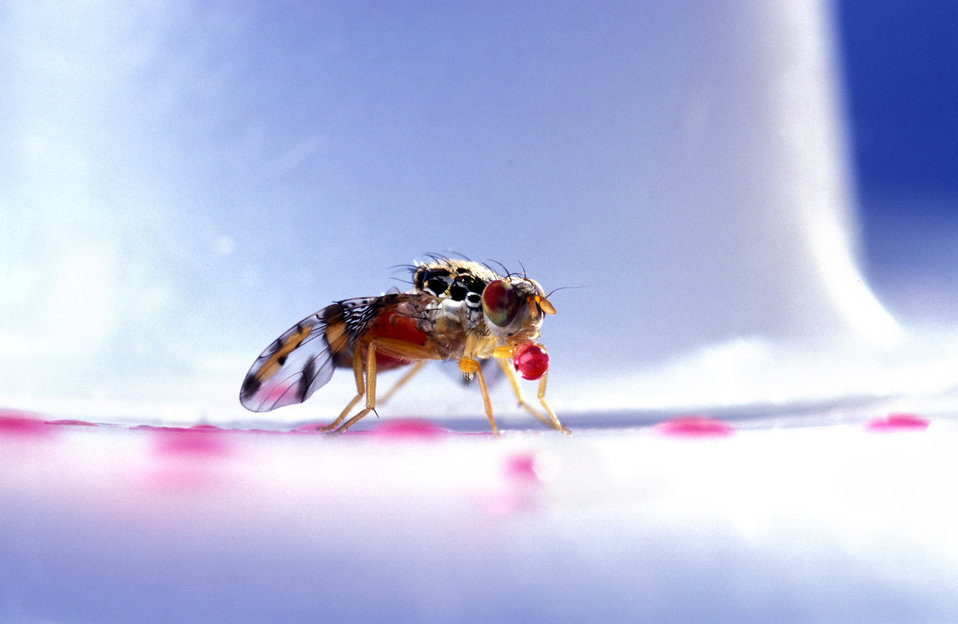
The Mediterranean fruit fly (Ceratitis capitata) or medfly is a species of fruit fly capable of causing extensive damage to a wide range of fruit crops. It is native to the Mediterranean area, but has spread invasively to many parts of the world, including Australasia and North and South America. The U.S. Department of Agriculture’s (USDA), Agriculture Research Service (ARS) scientists in Hilo, HI are collaborating with ARS researchers at Weslaco, TX to investigate phloxine B, better known as the FDA-approved red dye number 28 as an alternative to Malathion insecticide. The dye might prove a safer insecticide against Medflies. These pests often share regurgitated food and this helps spread the insecticidal dye-and-bait blend through the population.